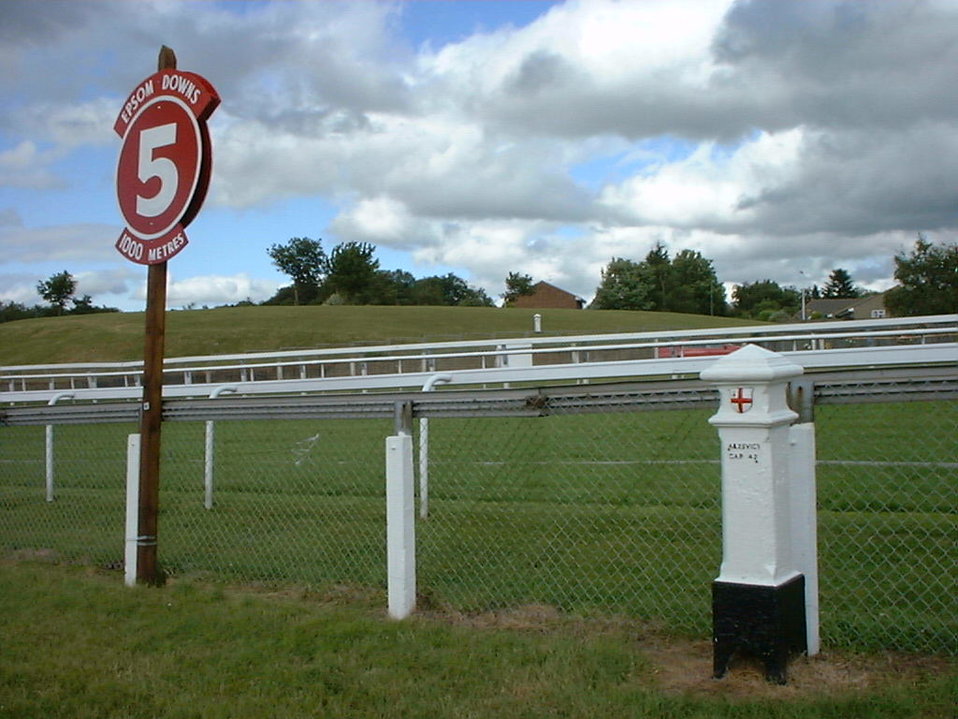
036175 5 furlong